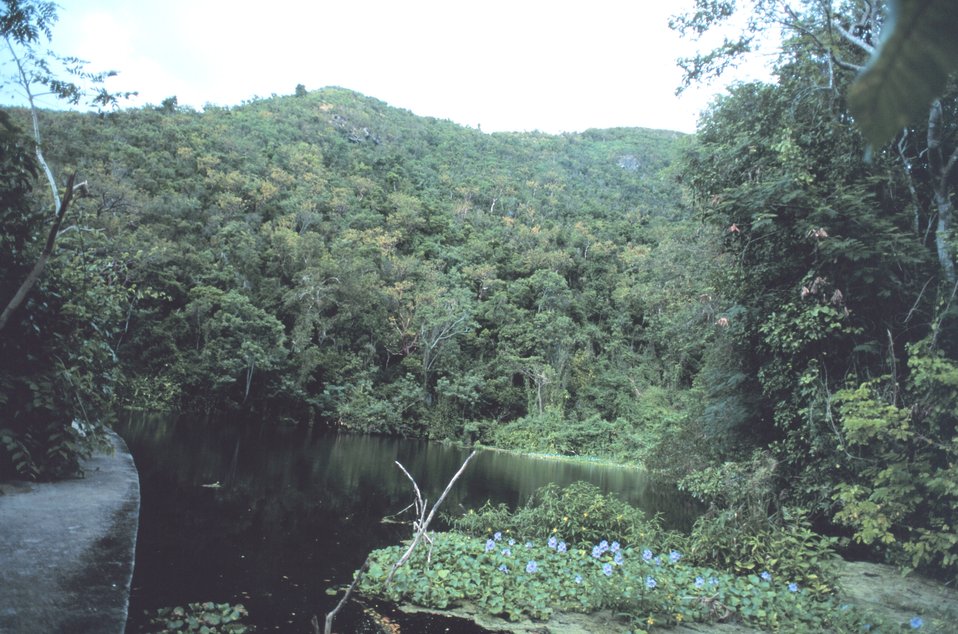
The Virgin Islands - tropical or desert? Shallow stream and rainforest on the west end of St. Croix.